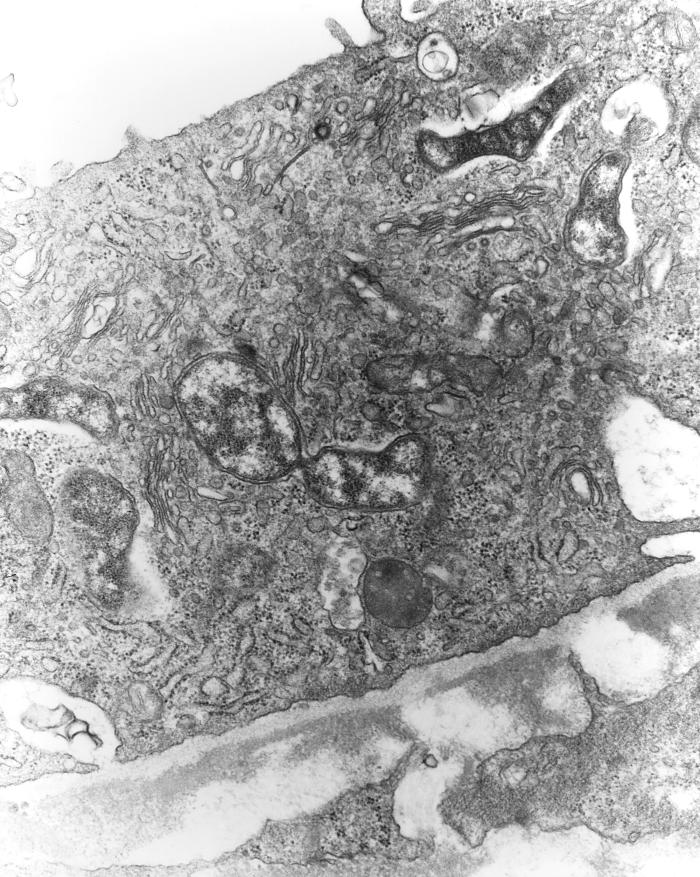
This 1976 transmission electron micrograph (TEM) depicted a hypertrophic peritoneal mesothelial cell of mouse that had been experimentally infected intravenously with Orientia tsutsugamushi rickettsial micro-organisms. This micrograph captured a dividing organism while it was visible free within the host cell's cytoplasm.